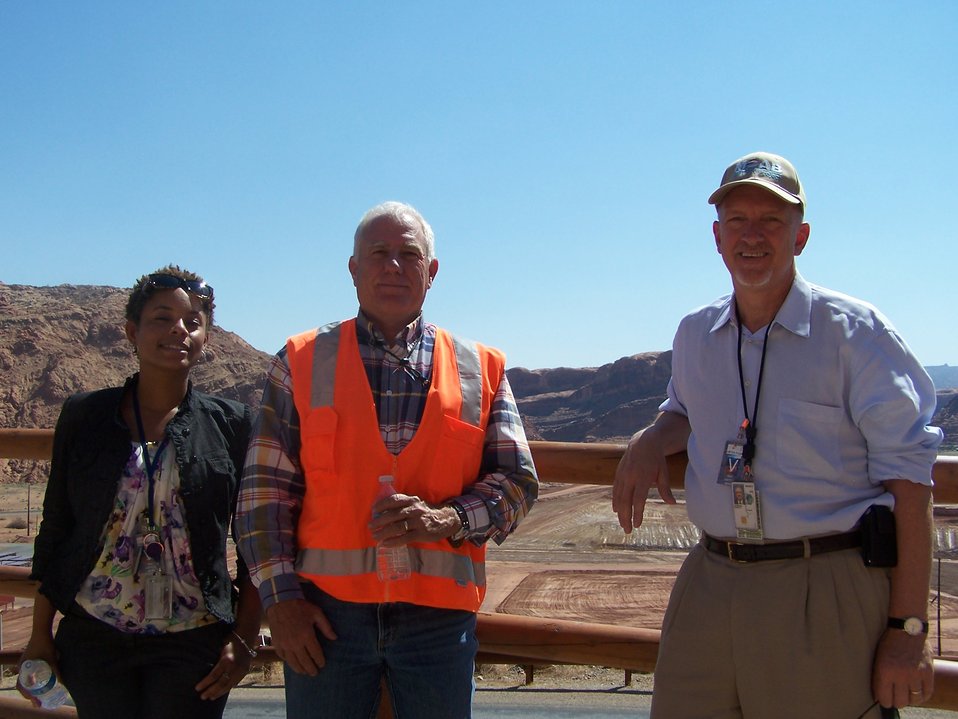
Huizenga Visit to Moab

Senior Advisor for Environmental Management David Huizenga (far right) visited the Moab site during June 2012.